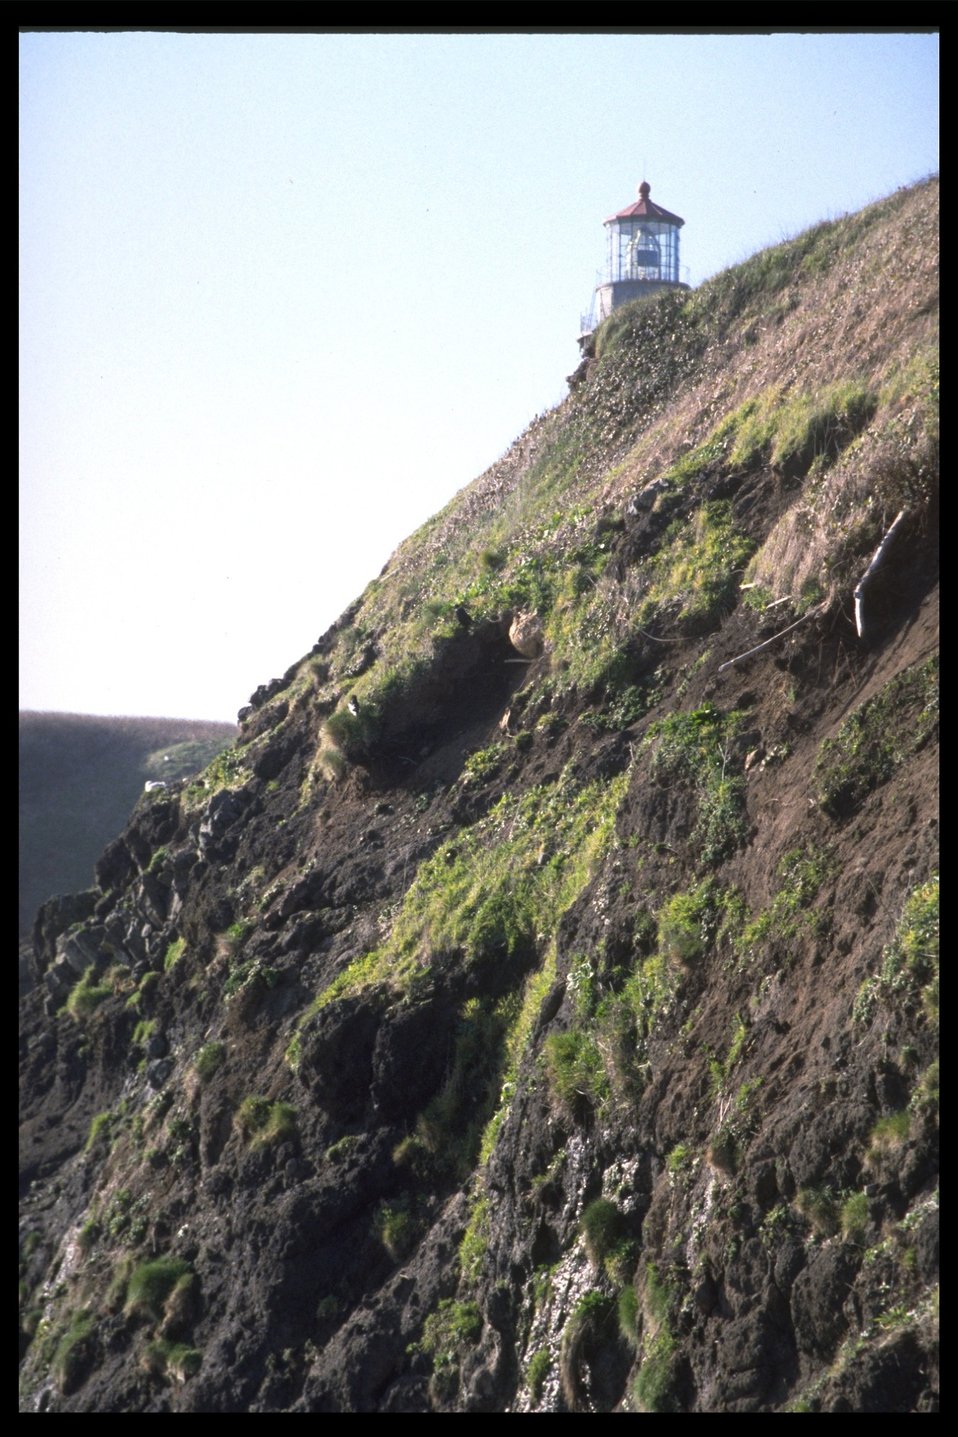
Yaquina Head Lighthouse.